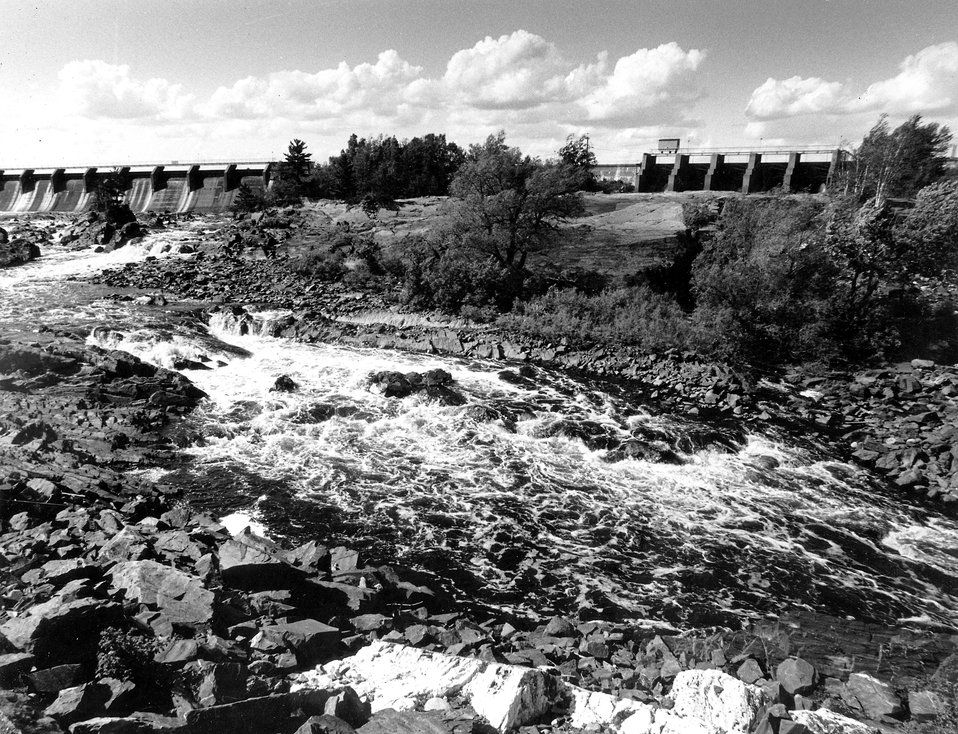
Minnesota Power, Thompson damsite. c. undated